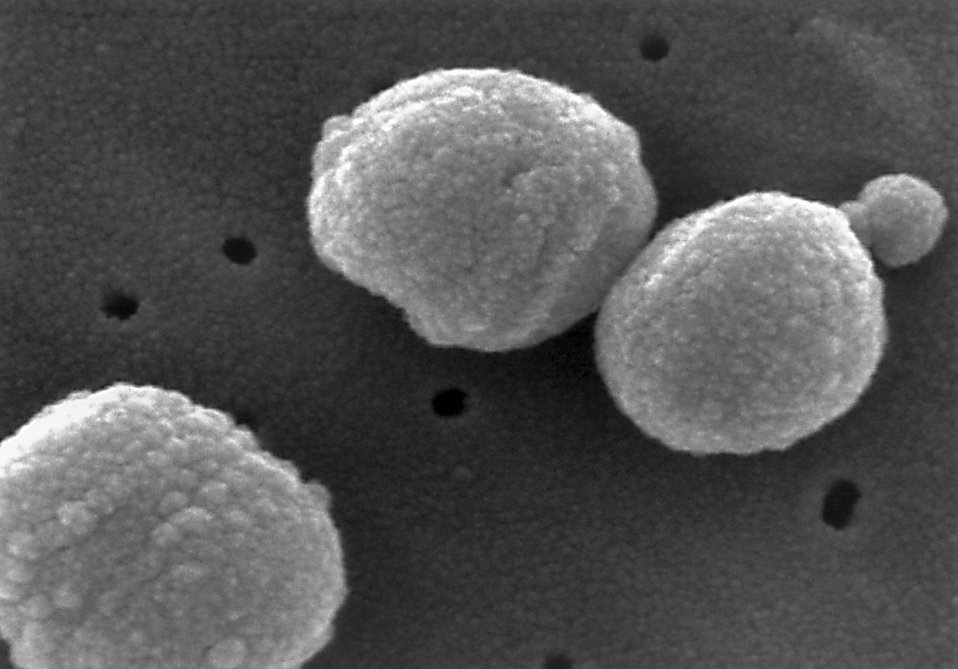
Scanning electron micrograph (SEM) of a number of Gram-positive Streptococcus pneumoniae bacteria.